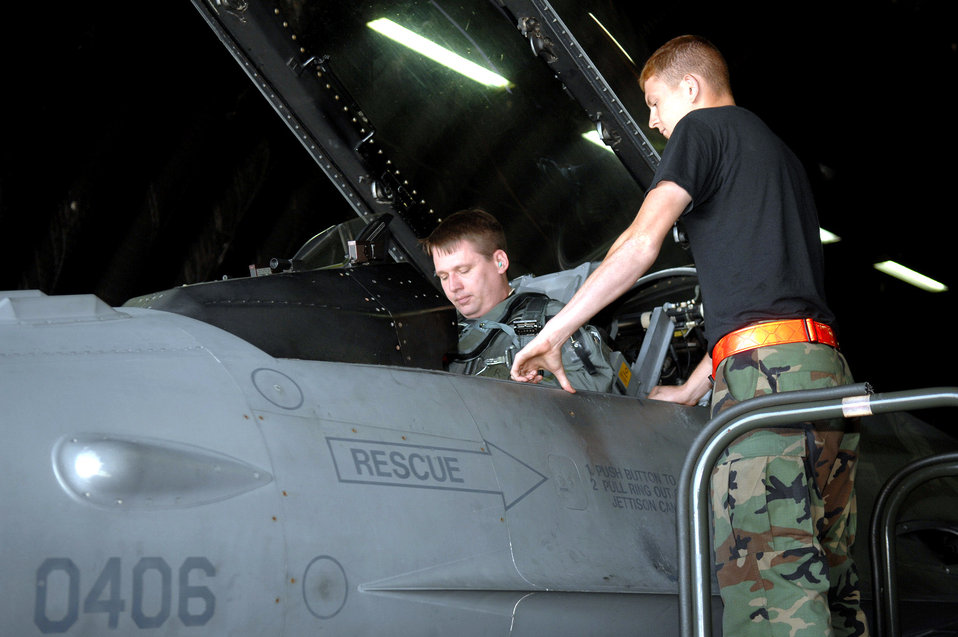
Pilots' missions relocate for Spangdahlem's runway repairs

Airman 1st Class Daren Cantu assists Lt. Col. Bartz Sykes with some last minute tasks June 11 before the pilot departs Spangdahlem Air Base, Germany, in his F-16 Fighting Falcon, en route to Nellis Air Force Base, Nev., due to the base's runway closure. Airman Cantu is assigned to the 52nd Aircraft Maintenance Squadron and Colonel Sykes is with the 22 Fighter Squadron.